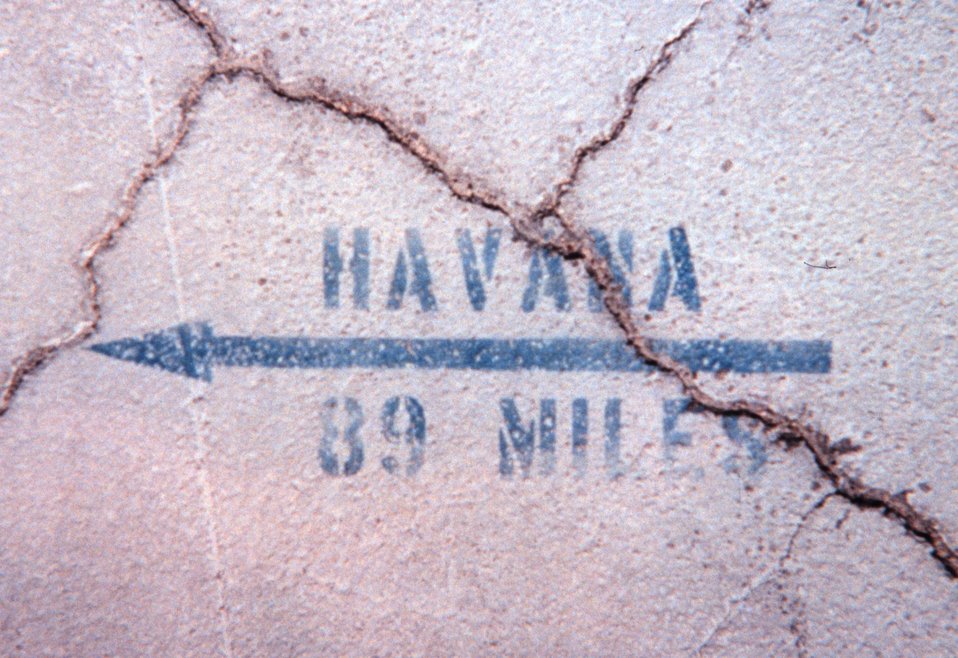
The distance and direction to Havana, Cuba, from the southernmost pier on Key West.